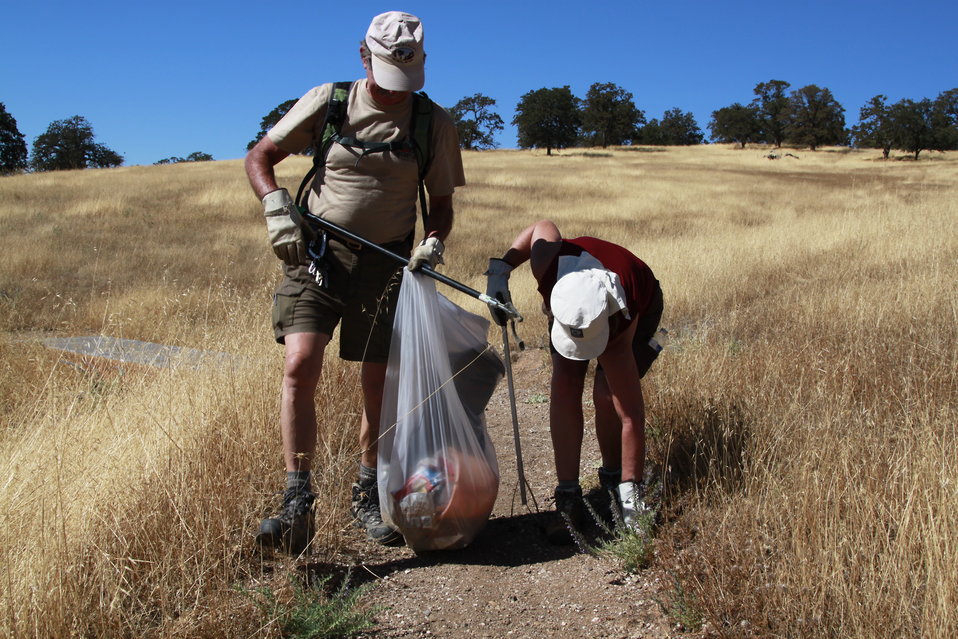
BLACK BUTTE LAKE, Calif. (Sept. 25, 2010) -- Volunteers help clean a trail during the 17th annual National Public Lands Day here Sept. 25. Park rangers from the U.S. Army Corps of Engineers Sacramento District and more than 20 volunteers celebrated the day with cleanup efforts at the park. The Corps has been involved with National Public Lands Day since its inception in 1994 and has consistently been one of the largest providers of sites and volunteers participating in the event. This year, the celebration coincides with California Coastal Cleanup Day and President Barack Obama’s America’s Great Outdoors Initiative, an effort to promote the conservation of outdoor spaces and reconnect Americans to the outdoors.